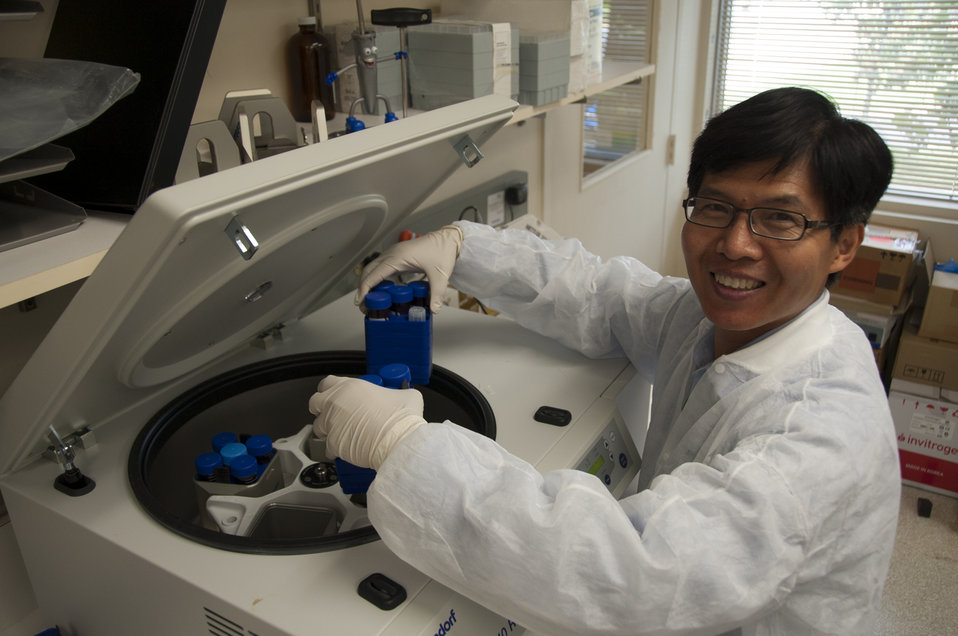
Blood Research: Saving Lives (8388)

Jason Liu, Ph.D., laboratory chief at FDA’s Office of Blood Research and Review places blood specimens into a centrifuge to isolate blood components. A unit of whole blood can be separated, for example, into platelets and red blood cells. The separated components can be studied separately and can be used for different patients with different needs. FDA is responsible for the safety of our nation’s blood supply and is at the forefront of evaluating and encouraging innovative technologies for protecting it.

Read this Consumer Update to learn more: Advances in Saving Lives with Blood